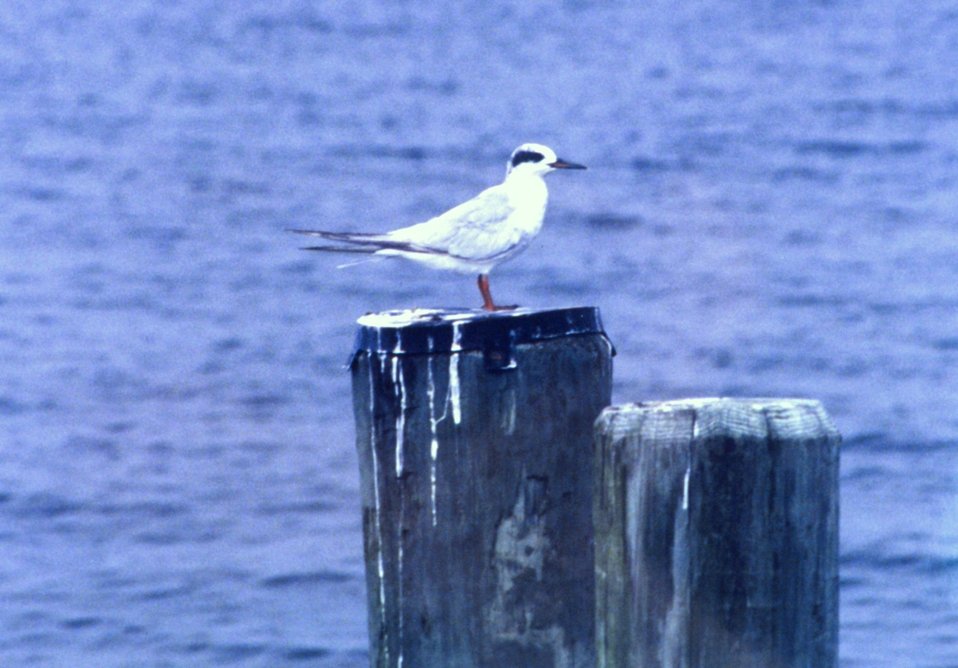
Possibly an immature Forster's Tern.